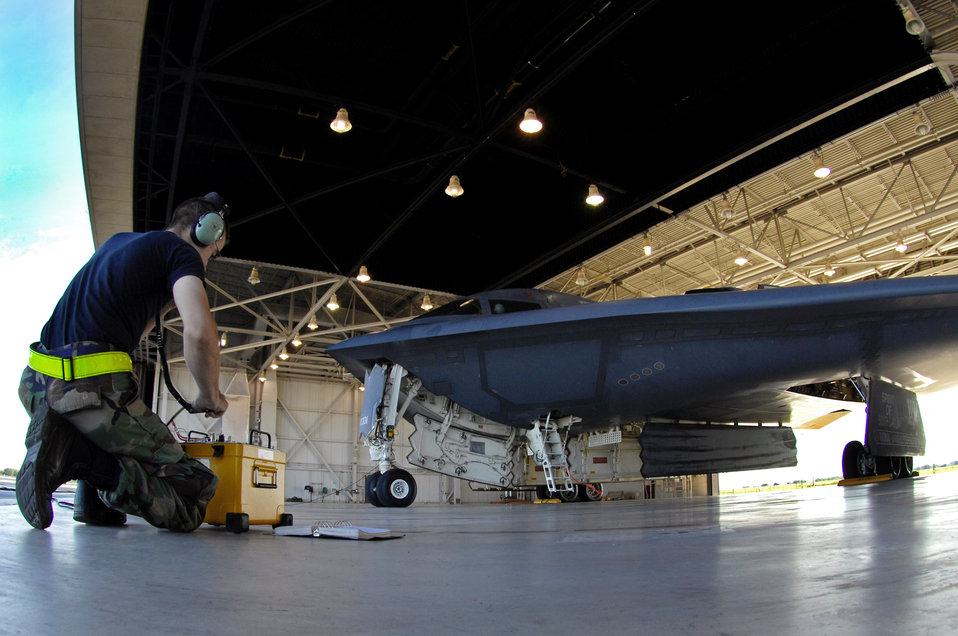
Ready for takeoff

A crew chief with the 509th Aircraft Maintenance Squadron performs a pre-flight check on a B-2 Spirit before takeoff Aug. 22 at Whiteman Air Force Base, Mo. Twenty B-2 bombers are assigned to the 509th Bomb Wing here. The B-2 brings massive firepower to bear, in a short time, anywhere on the globe through previously impenetrable defenses.